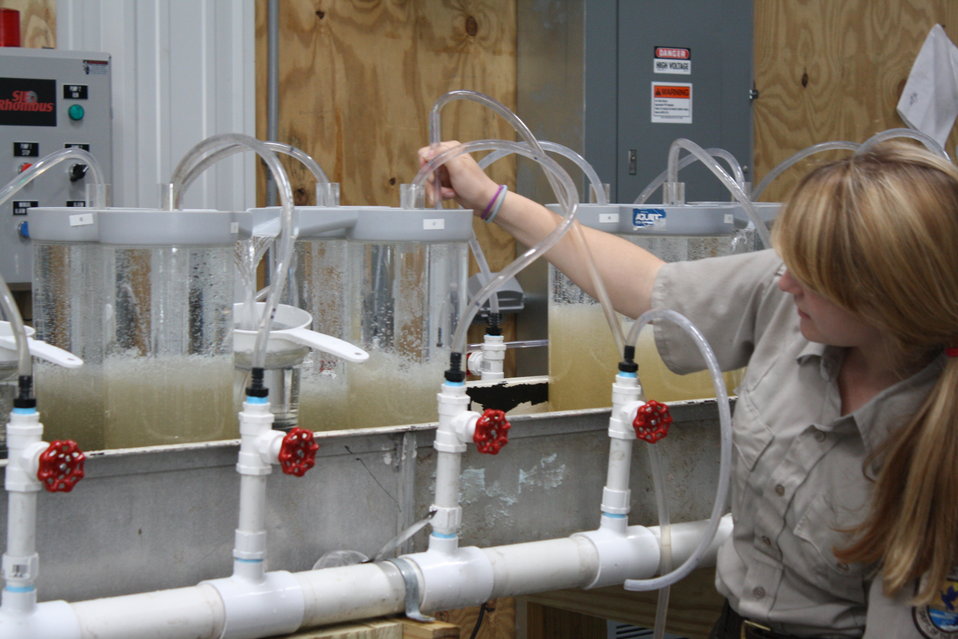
Nashua National Fish Hatchery welcomes regional office employees

Viewing equipment that separates healthy shad eggs from non-fertile eggs.